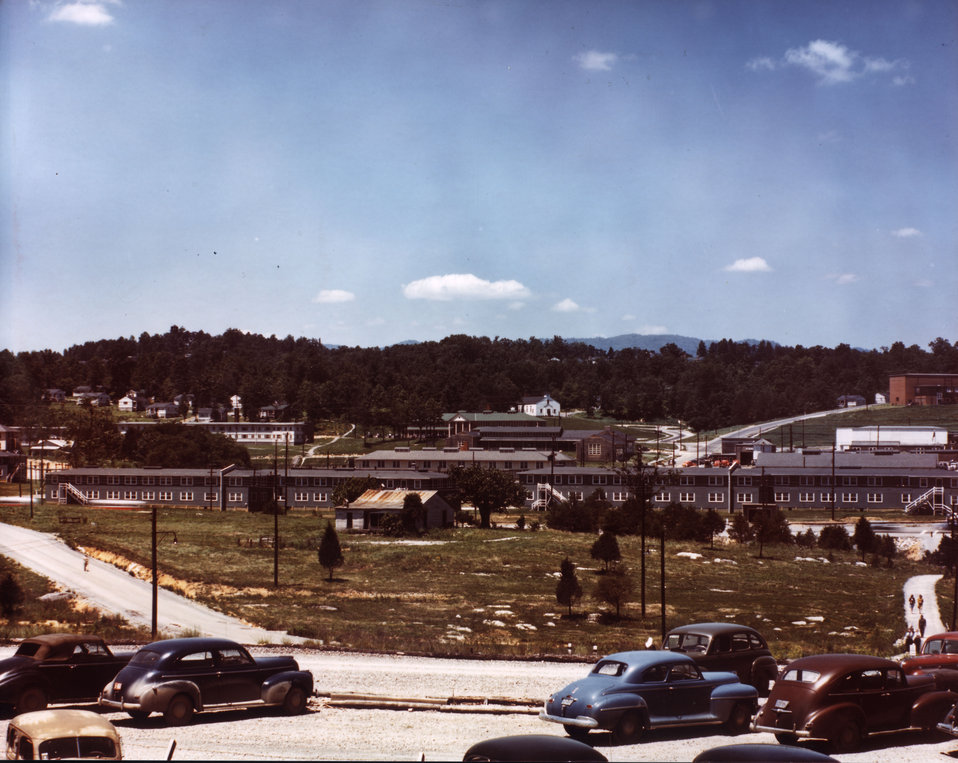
Oak Ridge Turnpike 1944

med163 DOE Photo by Ed Westcott
Oak Ridge Turnpike Oak Ridge Tennessee 1944